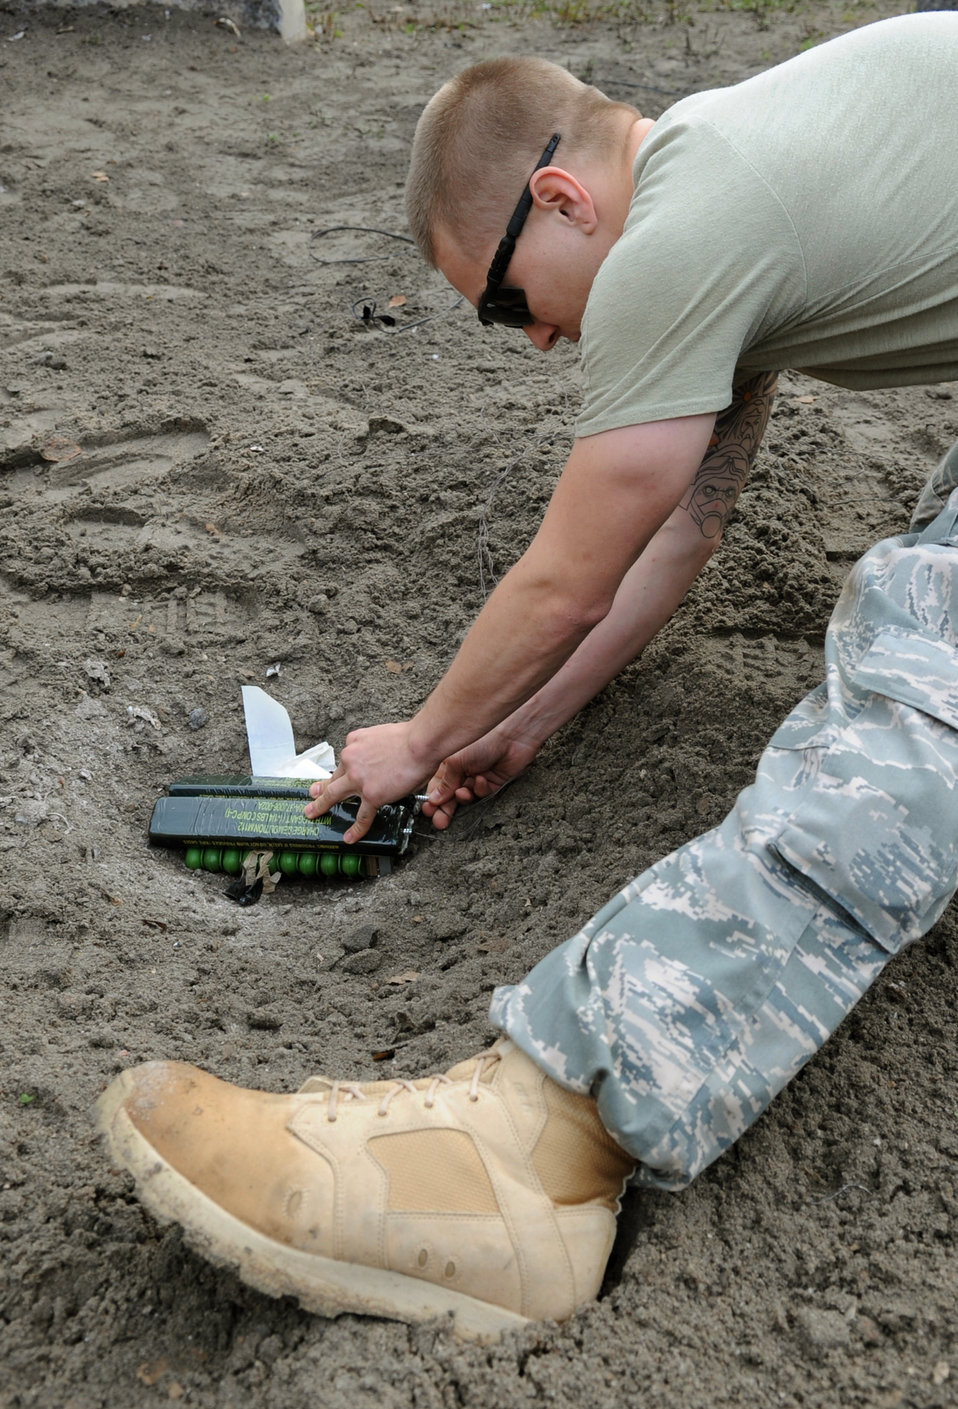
Handle with extreme care

Senior Airman Geoffrey Stegall, an explosive ordnance disposal craftsman, places blasting caps in C4 to destroy unserviceable explosives Oct. 5, 2010, on the EOD proficiency range at Ramstein Air Base, Germany. Airman Stegall is assigned to the 886th Civil Engineer Squadron.